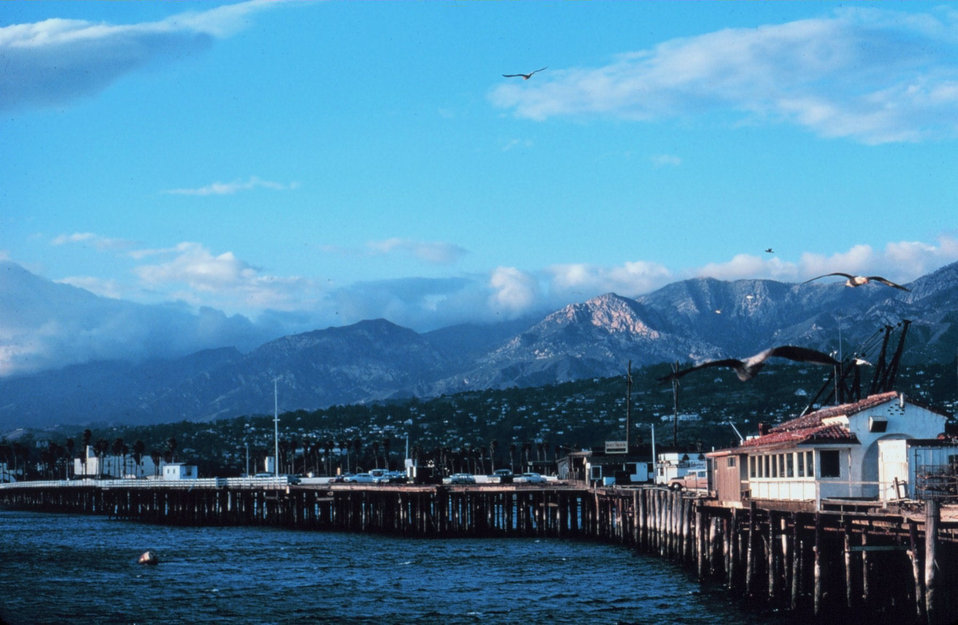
The pier at Santa Barbara